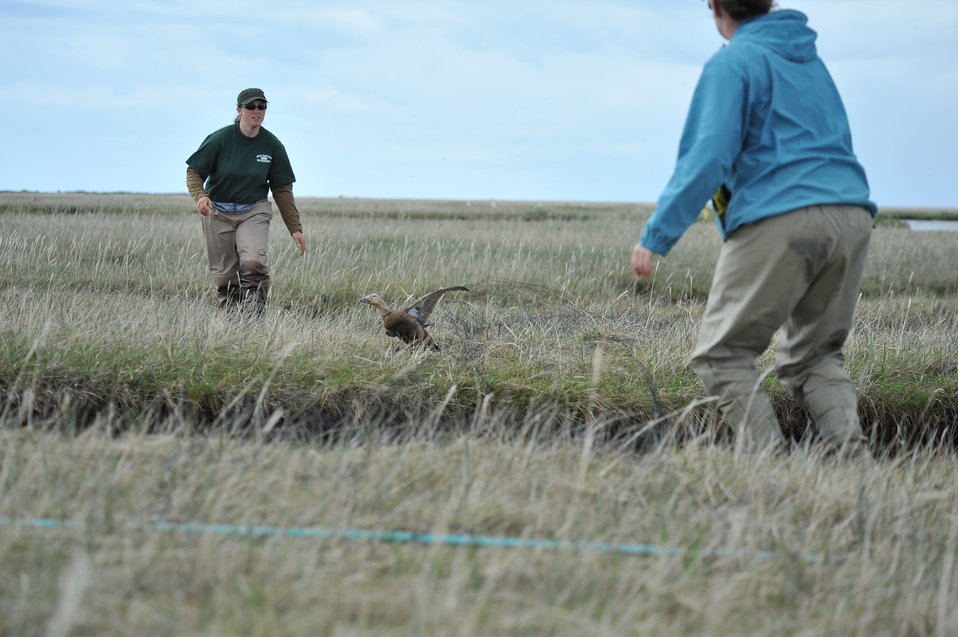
Mist-netting Spectacled eider

When the researchers have reached the female sitting on her nest the net is placed over top her. All females react differently to the net being placed on top of them but eventually they all jump of their nests and into the net where they get tangled.

USFWS Yukon Delta NWR